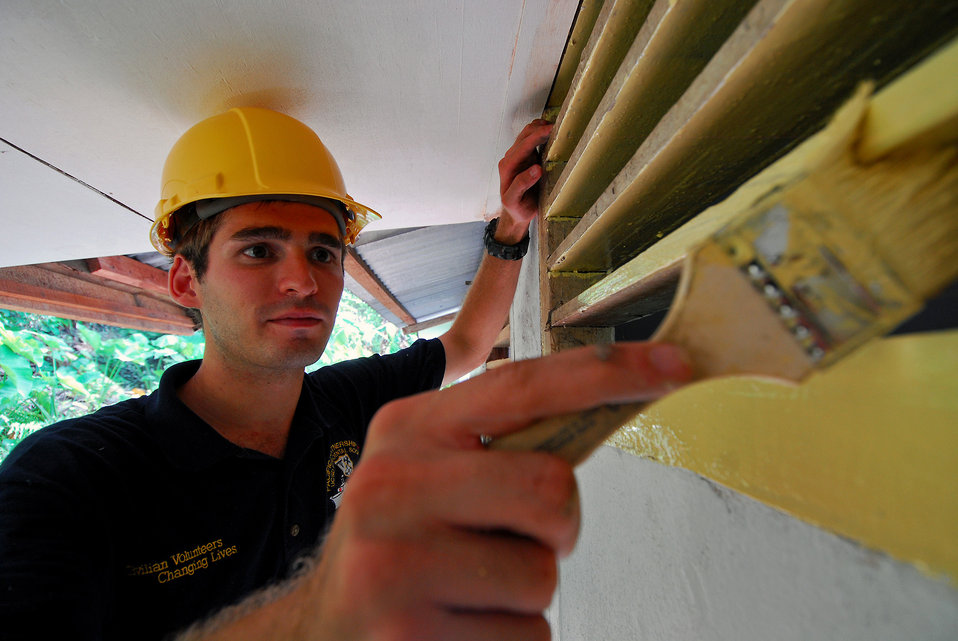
Volunteer Masavage Paints

Shaun Masavage, a volunteer with the University of California, San Diego Pre-Dental Society, paints during an engineering civic action program in Ambon, Indonesia, on July 30, 2010. Mercy is in Ambon participating in Sail Banda 2010. Mercy’s participation features medical and dental care clinics and construction projects in and around Ambon, as well as on Seram Island.